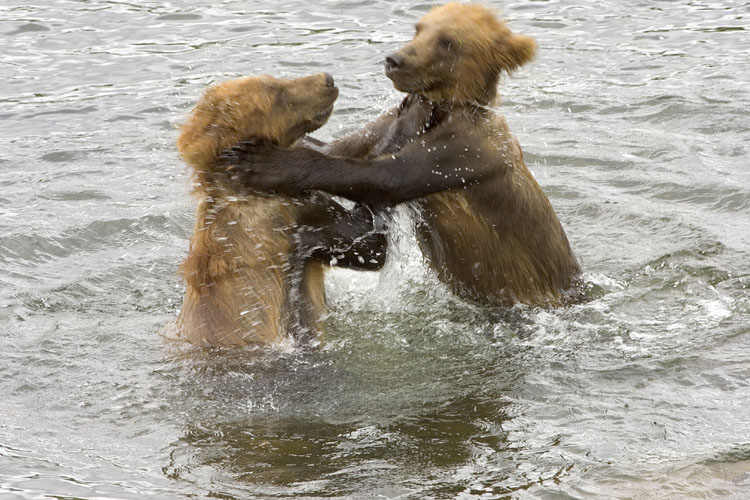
KOD Hildebrand (8)

Kodiak National Wildlife Refuge- Wildlife